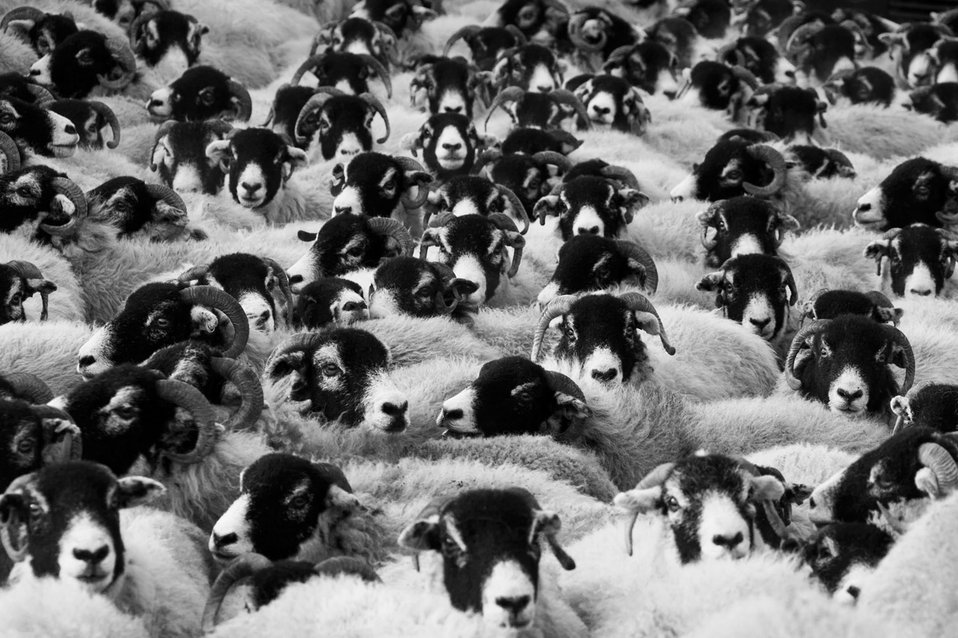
Flock of sheep creating an interesting pattern.